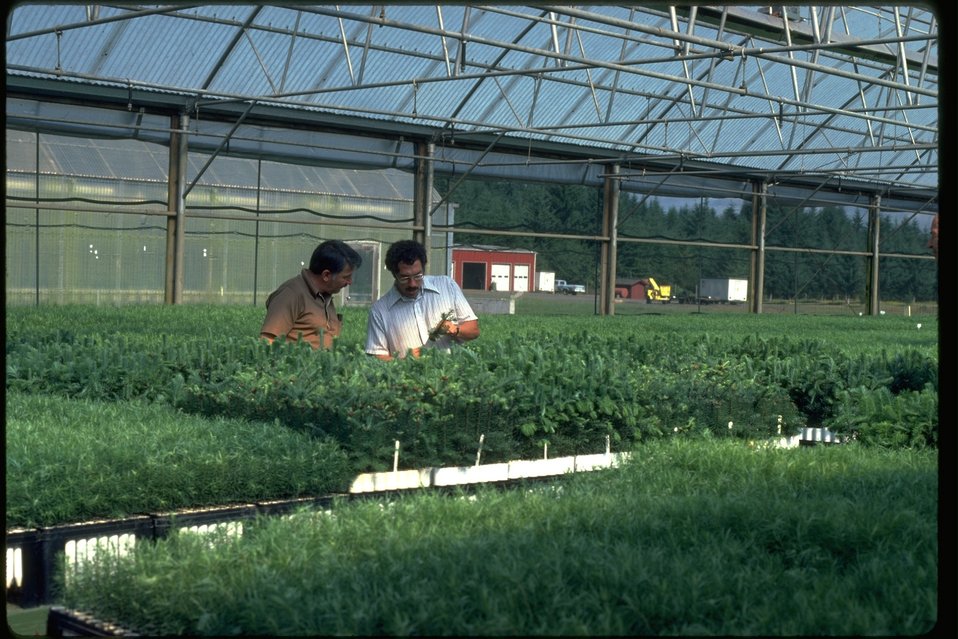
Many seedlings in a structure at the Horning Seed Orchard.